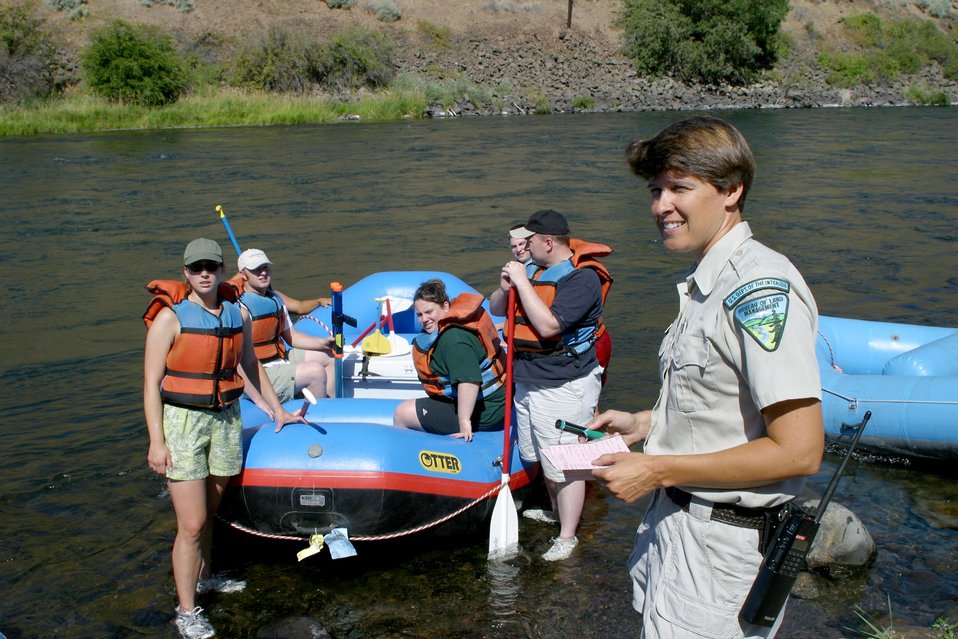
BLM River Rangers at Harphamp Flat check permits and issue boat tags while reminding users of current safety and fire regulations.